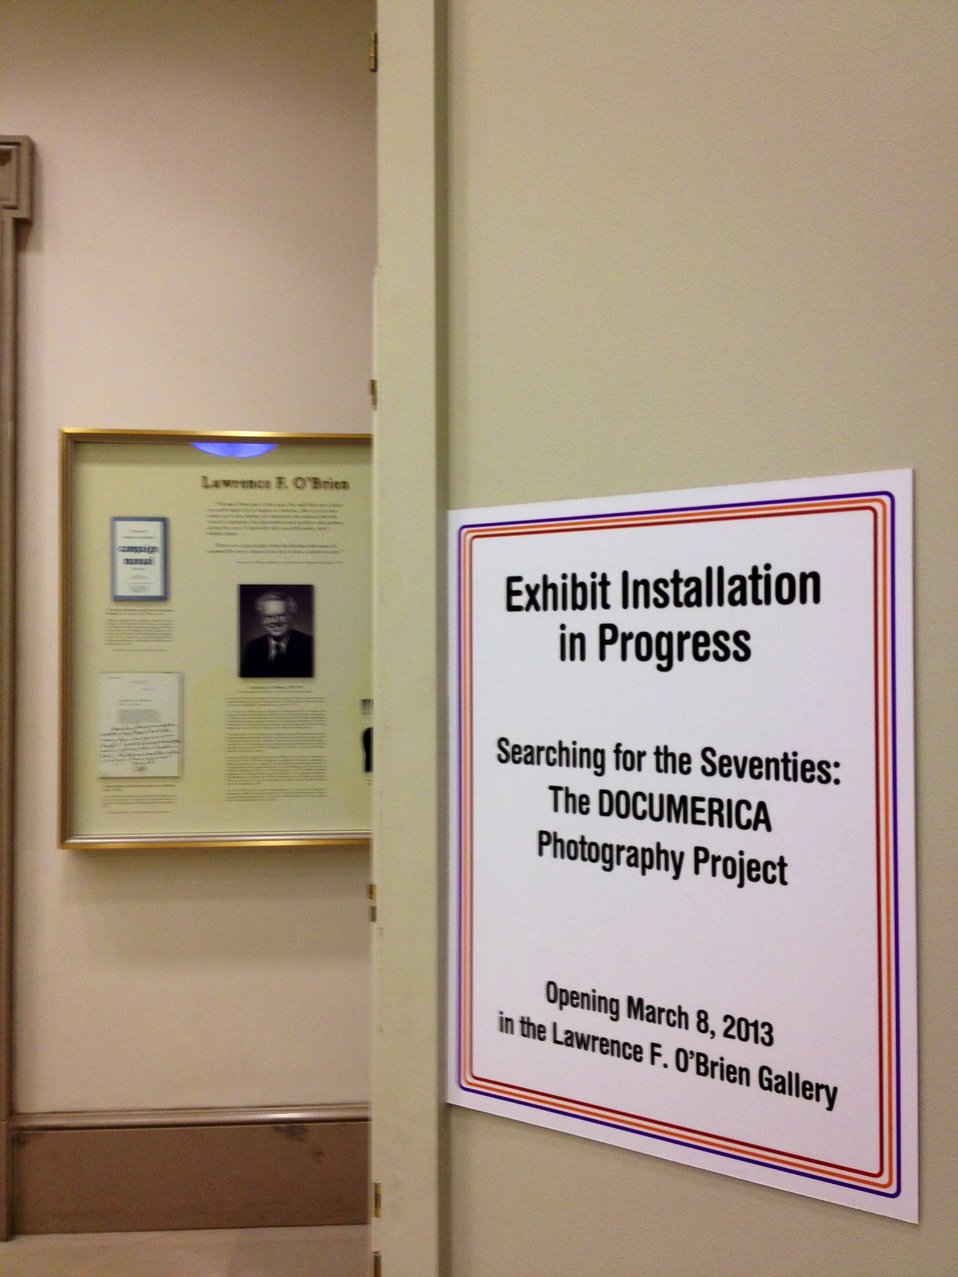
Documerica Installation Begins

Installation of 'Searching for the Seventies: The Documerica Photography Project' begins in the O'Brien Gallery. Opening March 8, 2013.